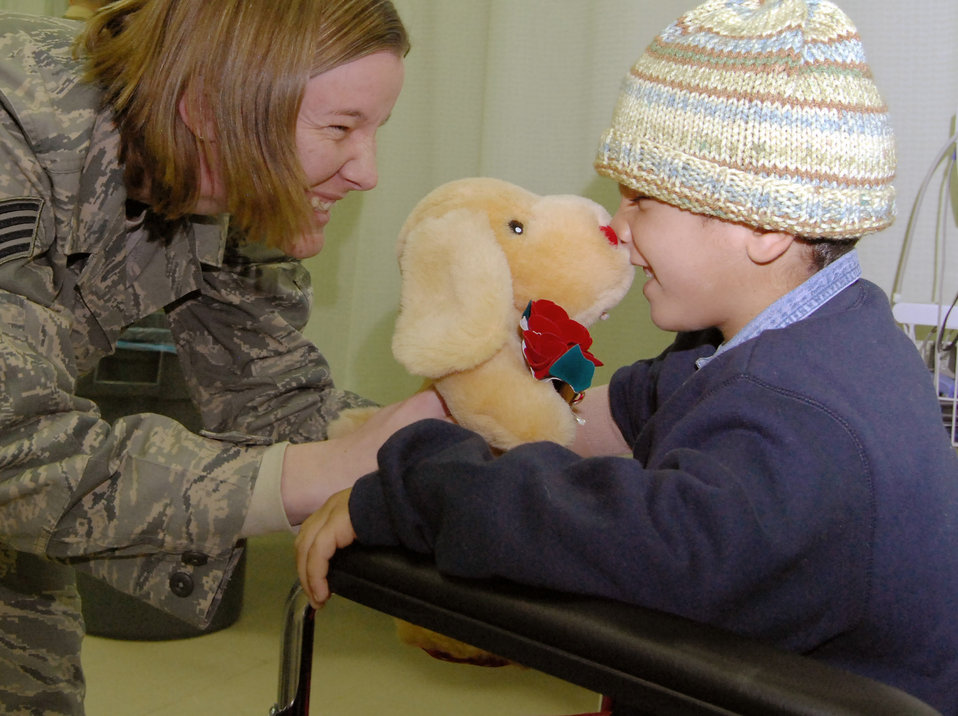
Iraqi aeromedical evacuation mission continues to evolve

Staff Sgt. Renee Durbin holds a stuffed animal up to Mustafa Jasim's nose in the Air Force Theater Hospital's intermediate care ward at Joint Base Balad, Iraq, Dec. 20. Mustafa, his brother and an Iraqi police officer were transported from Balad to the 86th Combat Support Hospital in Baghdad aboard Iraqi air force Mi-17 Hip helicopters. Sergeant Durbin, a volunteer with the hospital's Patient Administration and Disposition area and a native of Leavenworth, Kan., is deployed to the 332nd Expeditionary Maintenance Group from Moody Air Force Base, Ga.